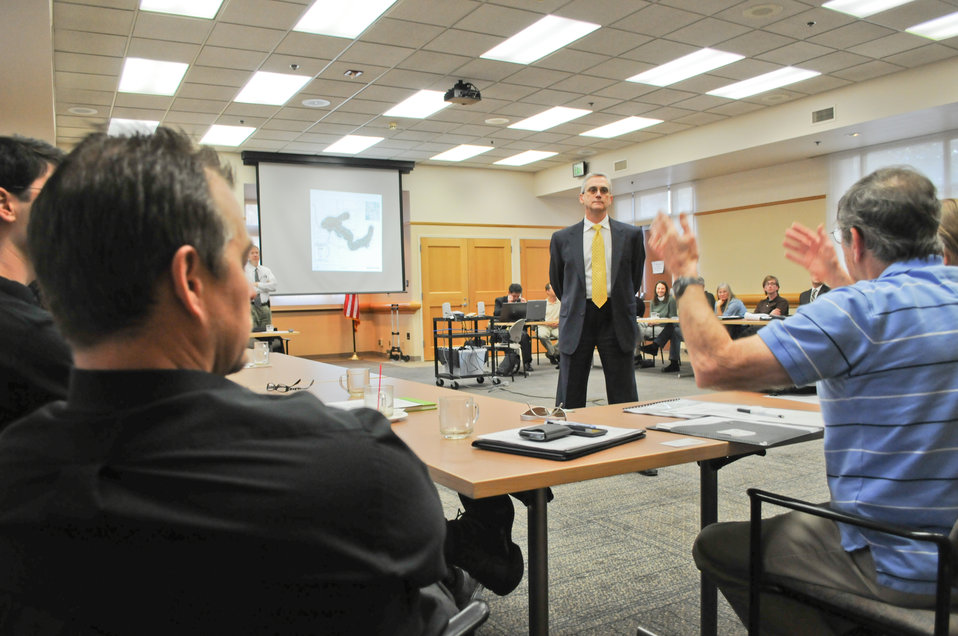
American River Common Features briefing Feb. 14, 2012

David McDaniel (center), U.S. Army Corps of Engineers Sacramento District program manager, gives an update on the Corps’ projects to reduce flood risk in the Sacramento area at a meeting of the Lower American River Task Force in Sacramento, Calif., Feb. 14, 2012. The task force has been meeting since 1994 to allow stakeholders to provide feedback on flood risk reduction projects to project planners. The Corps and its partners - the Central Valley Flood Protection Board and the Sacramento Area Flood Control Agency – are improving levees and working to increase the safety of Folsom Dam to reduce flood risk for Sacramento.